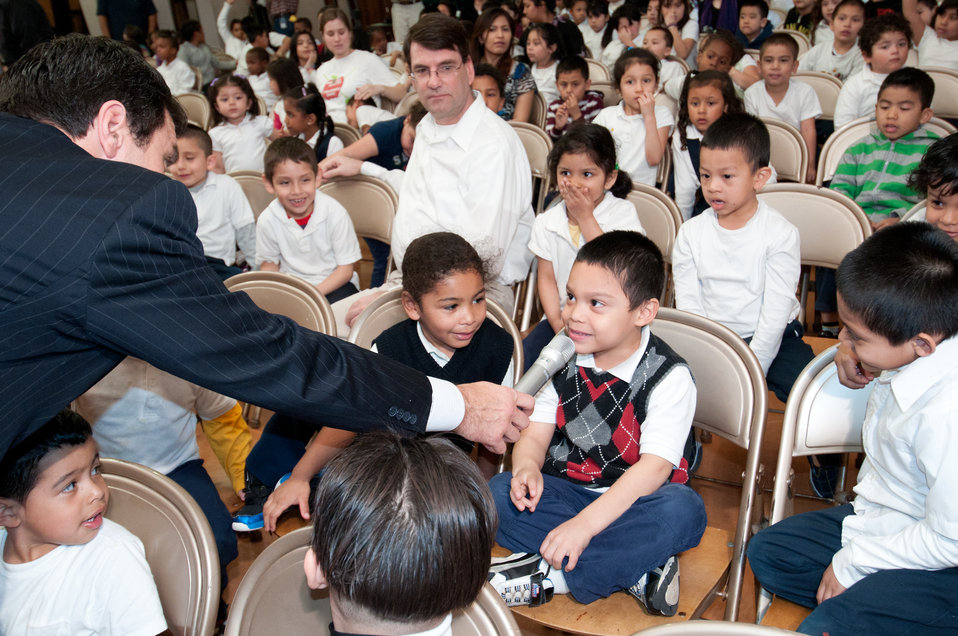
Comcast SportsNet Analyst Alan May asks a W. B. Powell Elementary School student a question about the School Garden Design Concept that the People’s Garden team (consisting of the Washington Capitols, U.S. Department of Agriculture and D.C. Public Schools in Washington, D.C.) revealed to 289 parents and students, on Thursday, March 10, 2011. The design draft was created by Forest Service landscape architect Matt Arnn, with the support of Natural Resources Conservation Service landscape architect Bob Sneickus, Outreach and Education Coordinator Annie Ceccarini and Project Manager Leslie Burks who worked with the Principal Janeece Docal and the school during an earlier visit to develop illustrated ideas from parents and students. Representing the Washington Capitols is Defenseman, Number: 52 Mike Green, Director of Community Relations Elizabeth Wodatch and Mr. May.